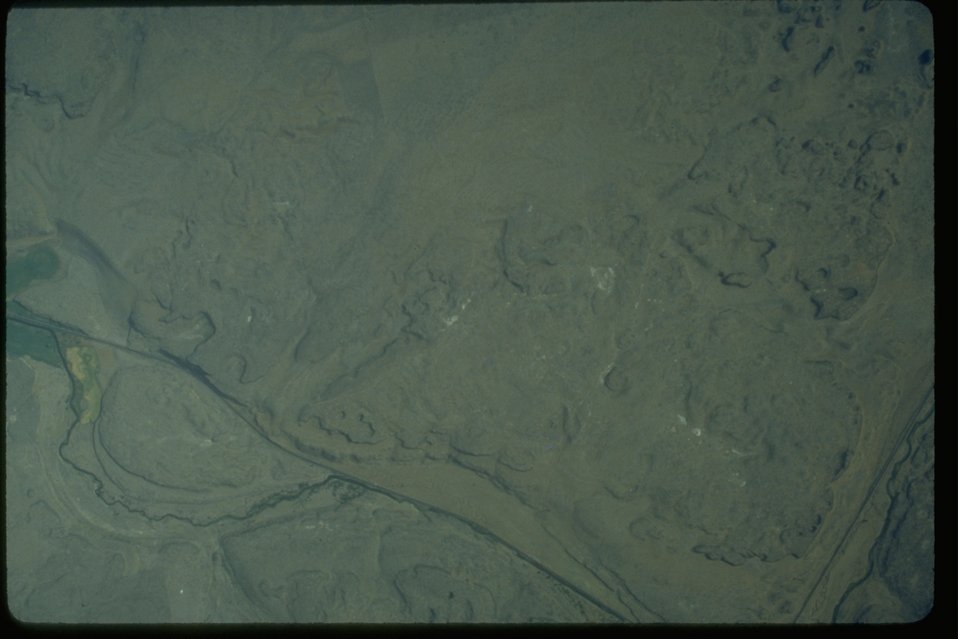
Arial view of the Channeled Scablands in Lincoln County, Washington